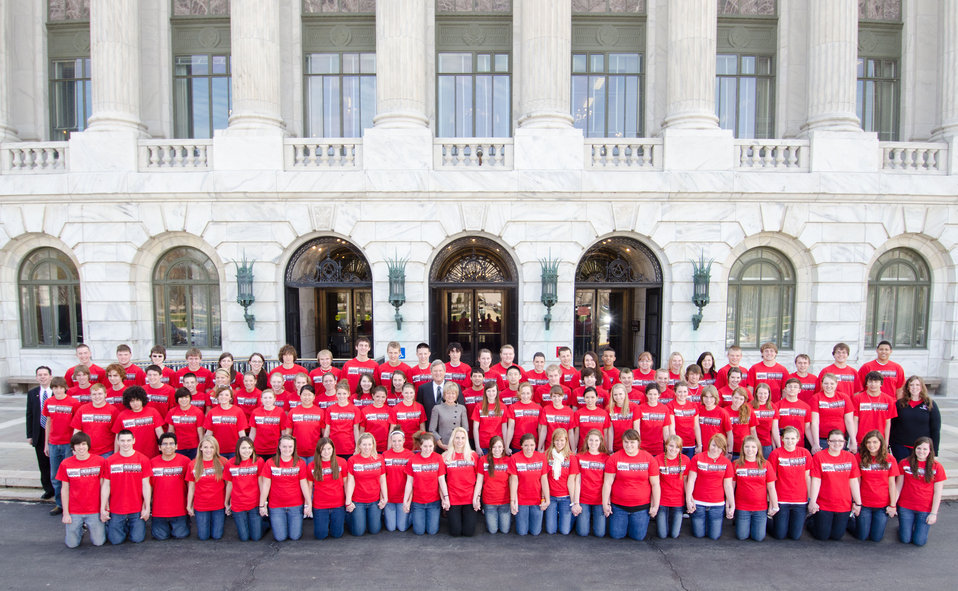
U.S. Department of Agriculture (USDA) Secretary Tom Vilsack (center) and his wife Christie met with more than 90 students and educators that came from Mason City High School, Mason City, Iowa to the USDA headquarters in Washington, D.C. on March 25, 2011. Secretary Vilsack talked about the mission of the USDA, the many places around the world that the USDA supports, as well as mentioning some noted Iowans in government and agriculture history. The Vilsacks answered several questions from the students, from “What is your day like,” to “What are the major problems USDA faces?”